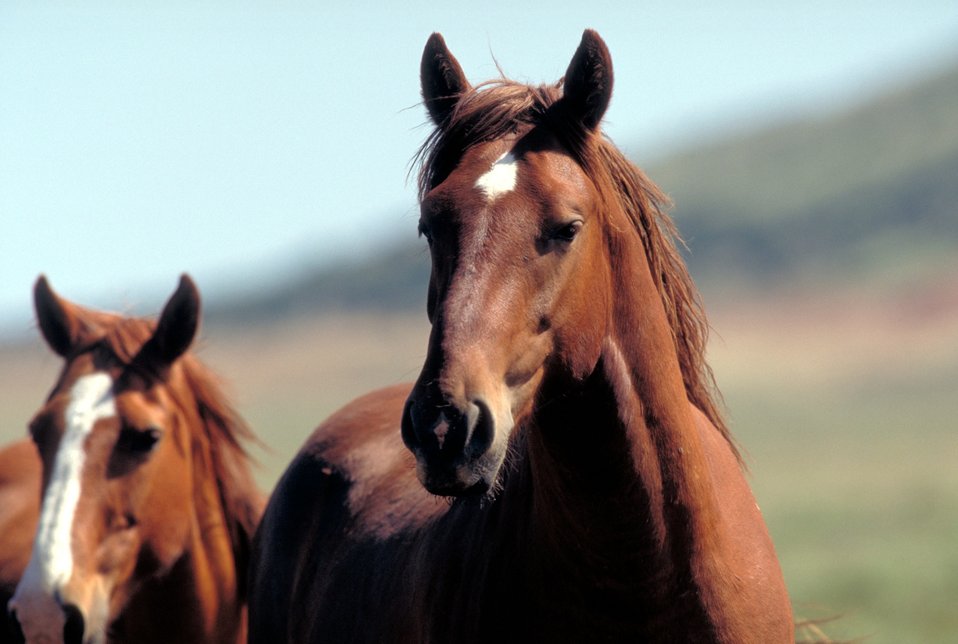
Onaqui Herd near Dugway, Utah.